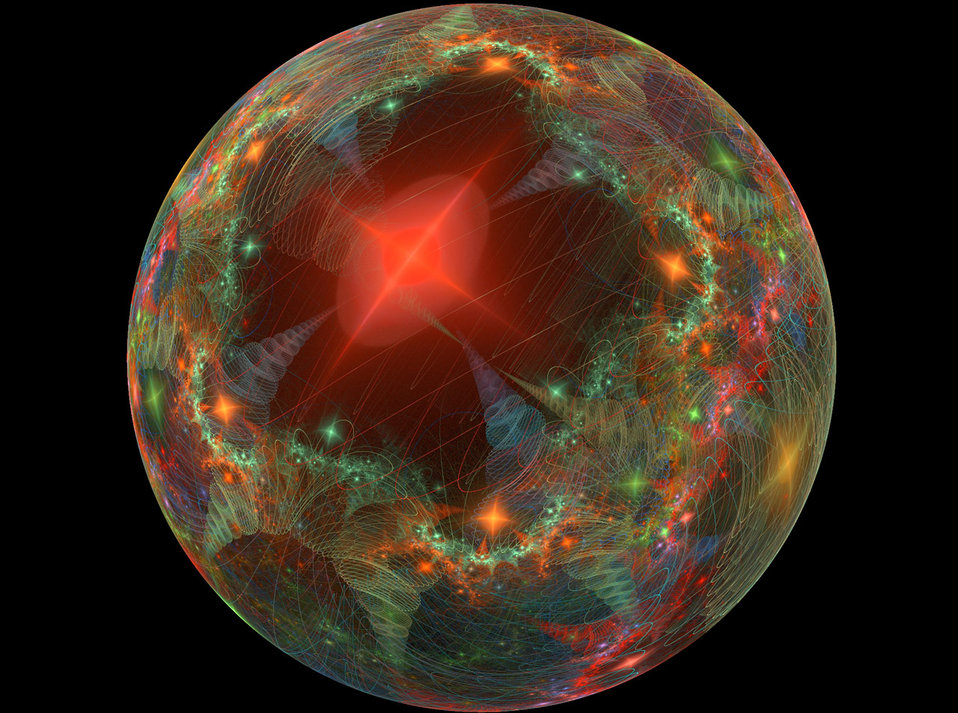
Ball in various colours

I love these fractals because they are interesting, and life like images.